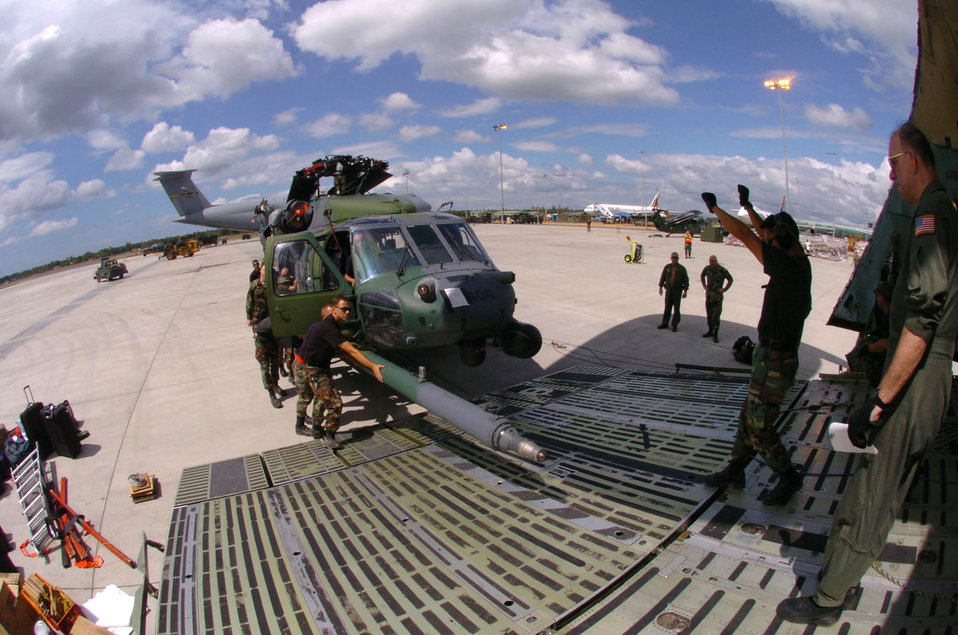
Heading Home

COLOMBO, Sri Lanka -- Tech. Sgt. Larry Haro guides Airmen loading an HH-60 Pave Hawk helicopter into a C-5 Galaxy aircraft after supporting Operation Unified Assistance here. The helicopters and Airmen deployed from the 33rd Rescue Squadron at Kadena Air Base, Japan, and are returning to their home station after helping deliver relief goods to tsunami victims. Sergeant Haro is a Pave Hawk crew chief.